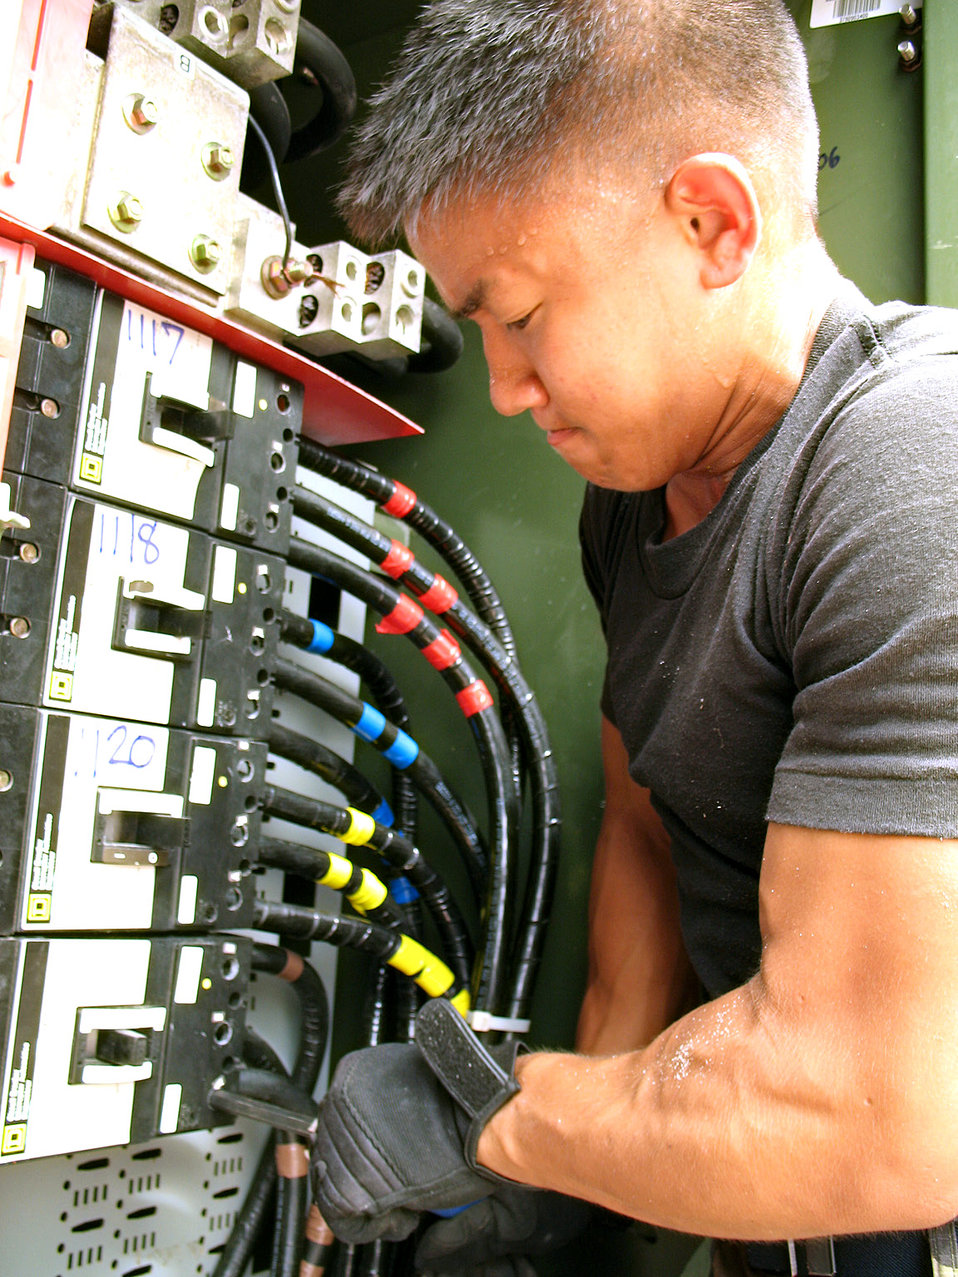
Young Airman excels, learns at Wake Island

Airman 1st Class Alex Jaime wrestles an electrical cable into place in a transformer on Wake Island Sept. 17. Airman Jaime is a member of the damage assessment team deployed from Hickam Air Force Base, Hawaii, to estimate the cost of damage left by Super Typhoon Ioke.